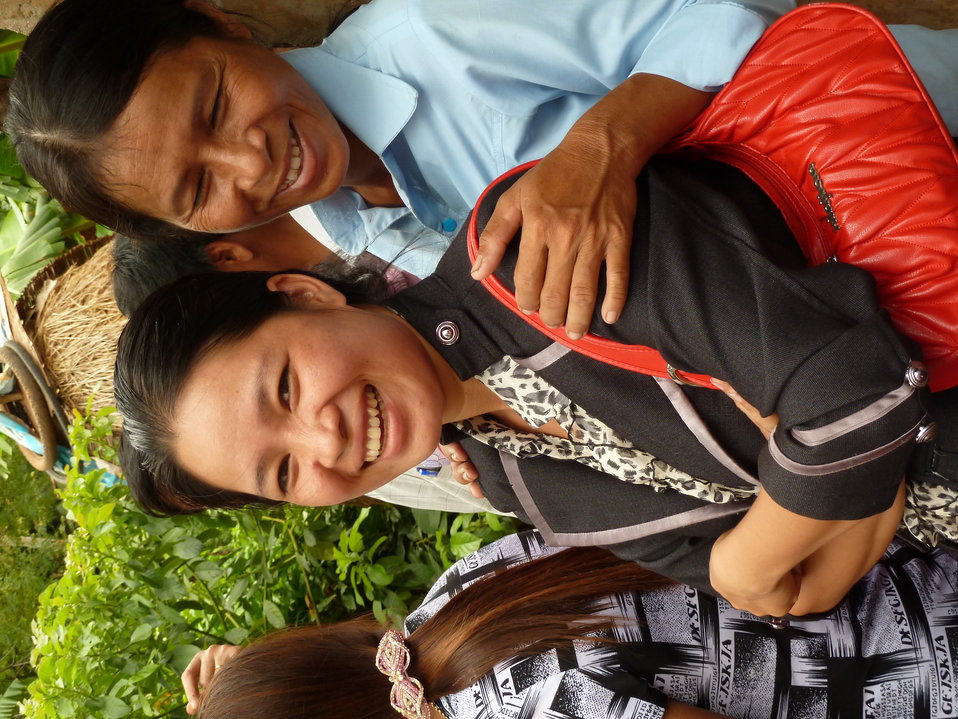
Animal health worker training in Quang Tri province